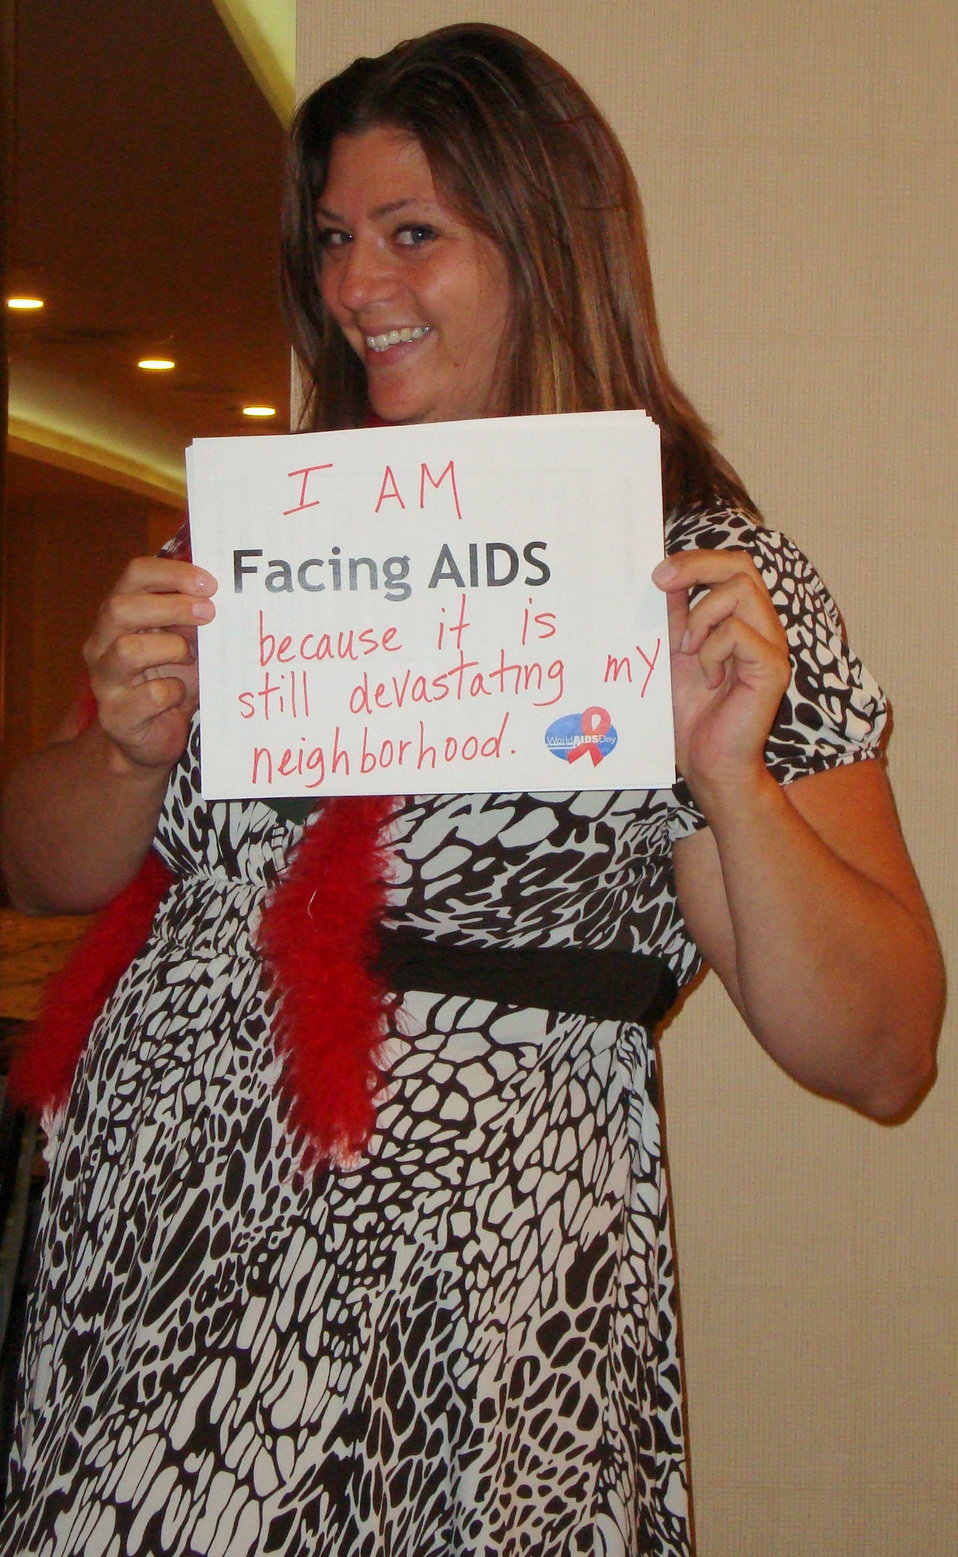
FacingAIDSCampaign 027